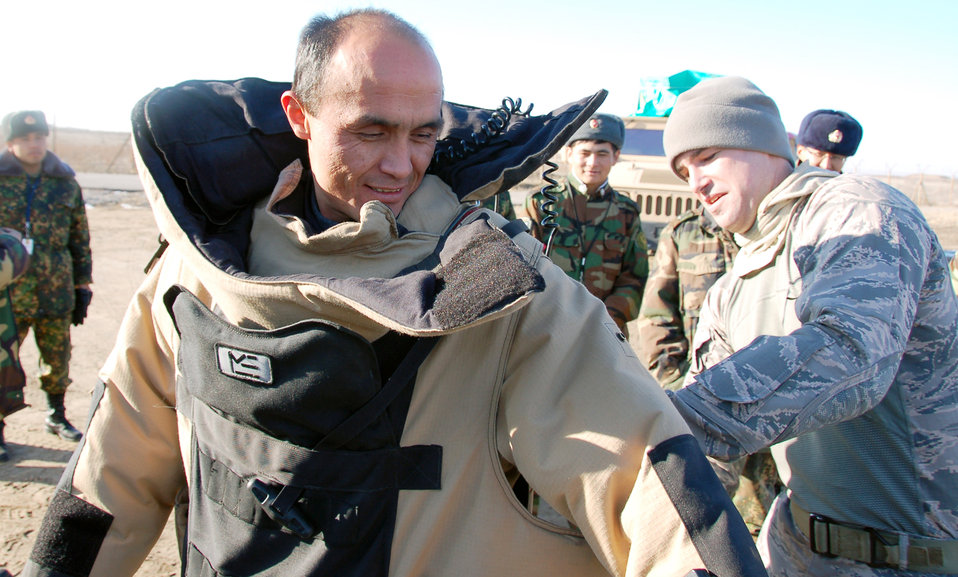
Airmen train Kyrgyz officials on EOD mission

Tech. Sgt. Joseph Deslauriers assists Kyrgyz Lt. Col. Kadyrov Almazbek with putting on an explosive ordnance disposal protection suit Dec. 15, 2009, during the Kyrgyz Ministry of Defense team's visit to learn about EOD operations from Airmen with the 376th Expeditionary Civil Engineer Squadron at the Transit Center at Manas, Kyrgyzstan. The five-day visit, which enabled the Kyrgyz team get a close-up look at various EOD equipment, was to help the host nation build its EOD team. Sergeant Deslauriers is an EOD technician with the 376th ECES.